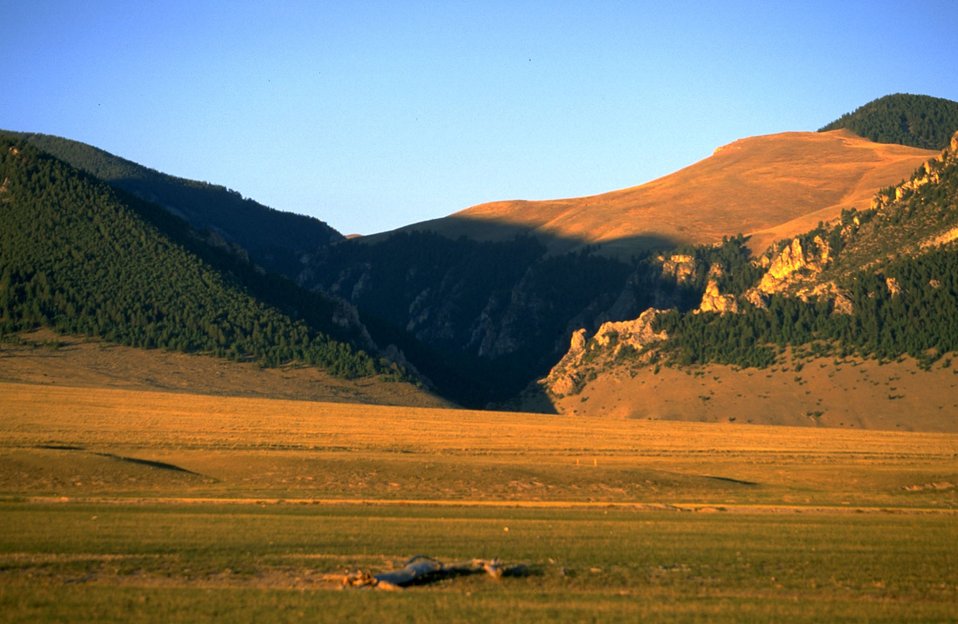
View of valley with mountains in background